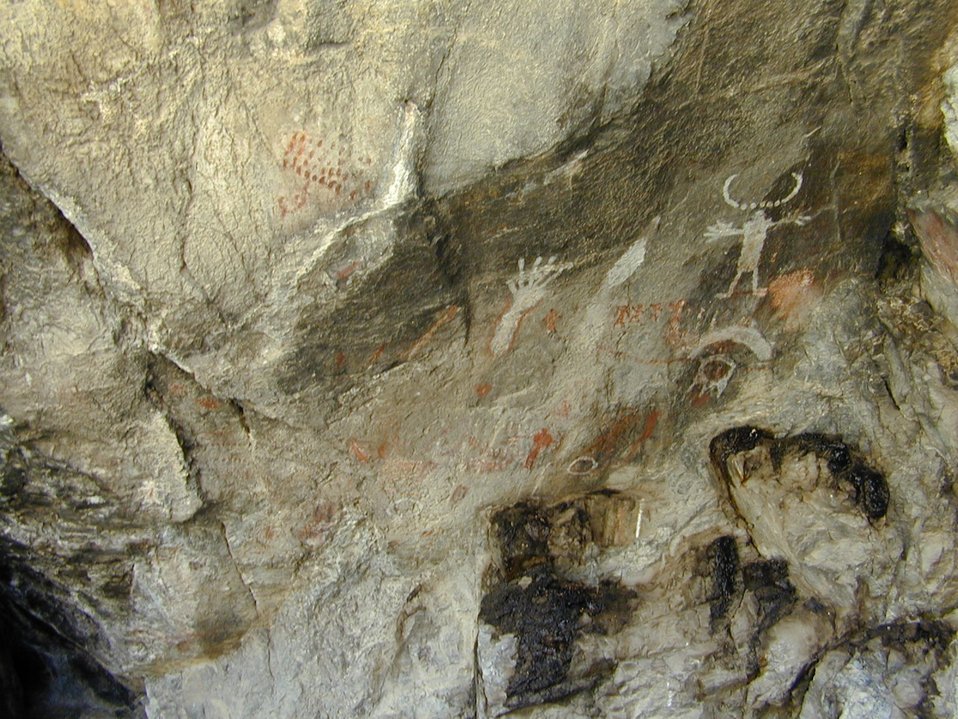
Petroglyphs Birch Creek Valley